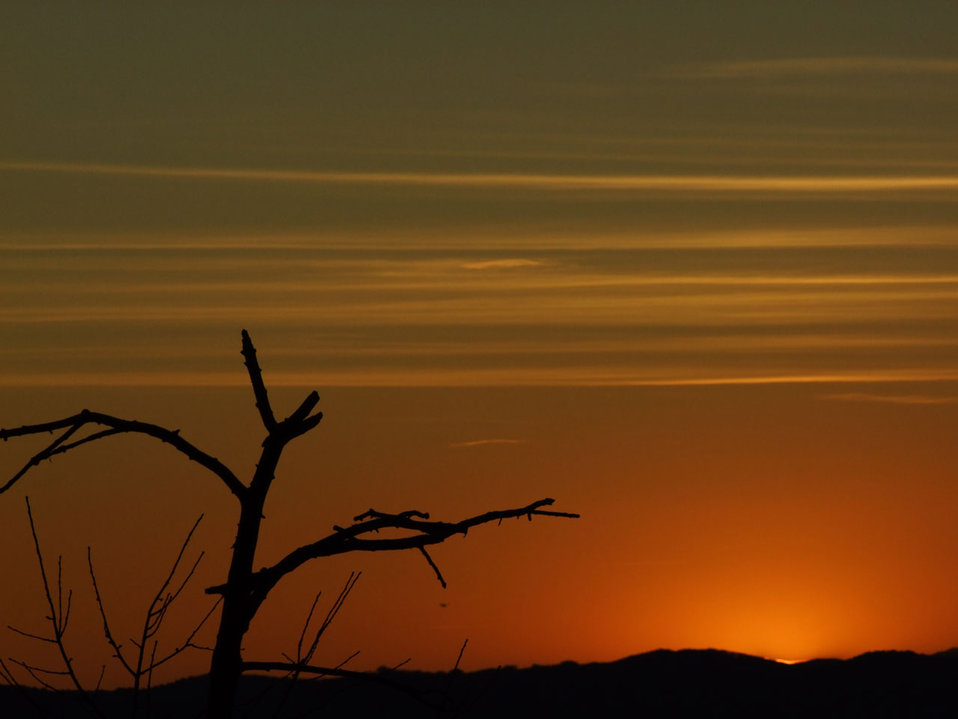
Sunset

After photographing barn and mountains at brezje.